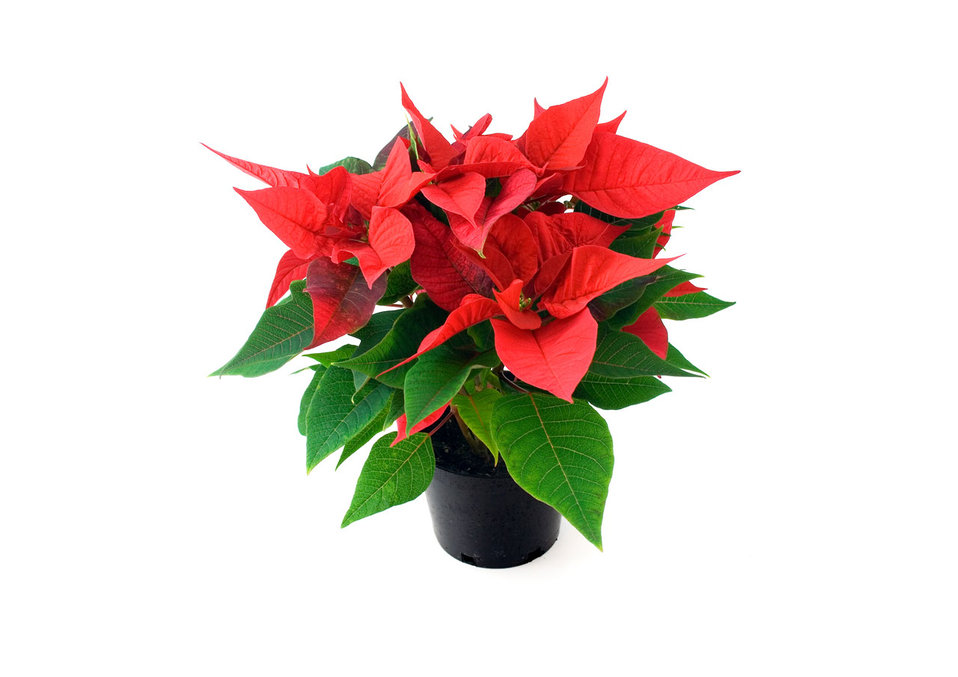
Poinsettia

Poinsetta in the pot.